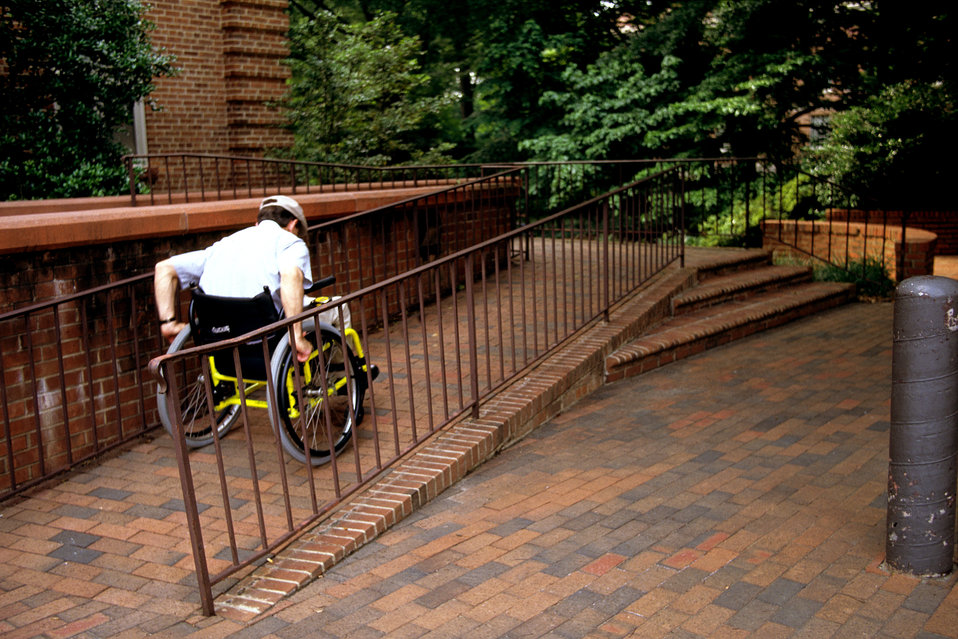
This image, as well as PHIL# 9014, and 9016, all depicted people with reduced states of mobility, who were accessing a walkway ramp while using either crutches, or as was the case here, a wheelchair. In this particular view, a brick switch-back ramp with its black metal railings, had been added to the entrance on an older, traditionally-designed fa�e, whereupon, the ramp began not far from where the stairs had been positioned, thereby, making the accessibility route short, and easy to find, which stands in stark contrast to PHIL# 9012. This made the choice in access route easier for visitors, demonstrating that some ramps, as well as other 'stepless'-entrance features, can benefit people who are ambulatory, as well as those who use wheelchairs.